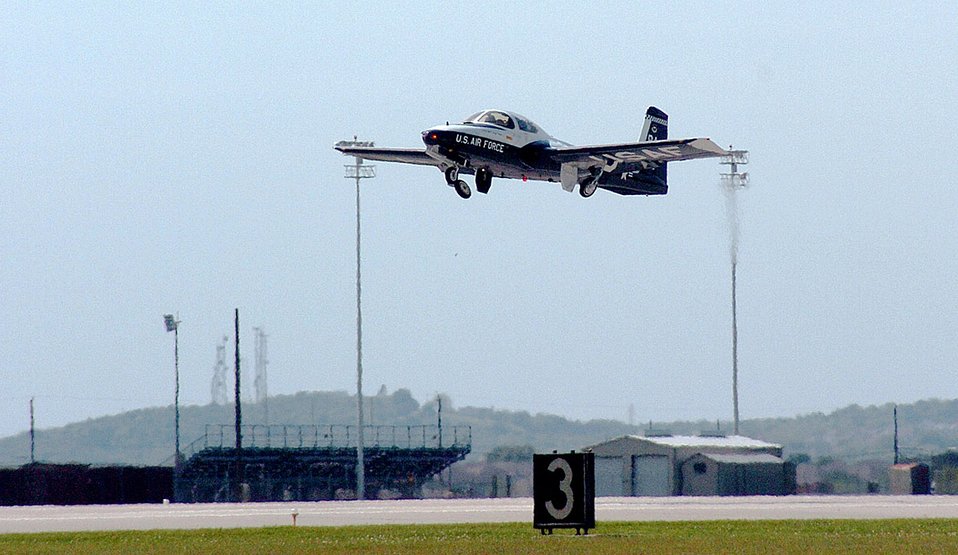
Tweet closes 42-year Randolph career

The last Randolph T-37B Tweet departs the flightline April 6 during the aircraft's official retirement ceremony from base. The Tweet served as the primary pilot instructor training aircraft from October 1965 to April 2007.